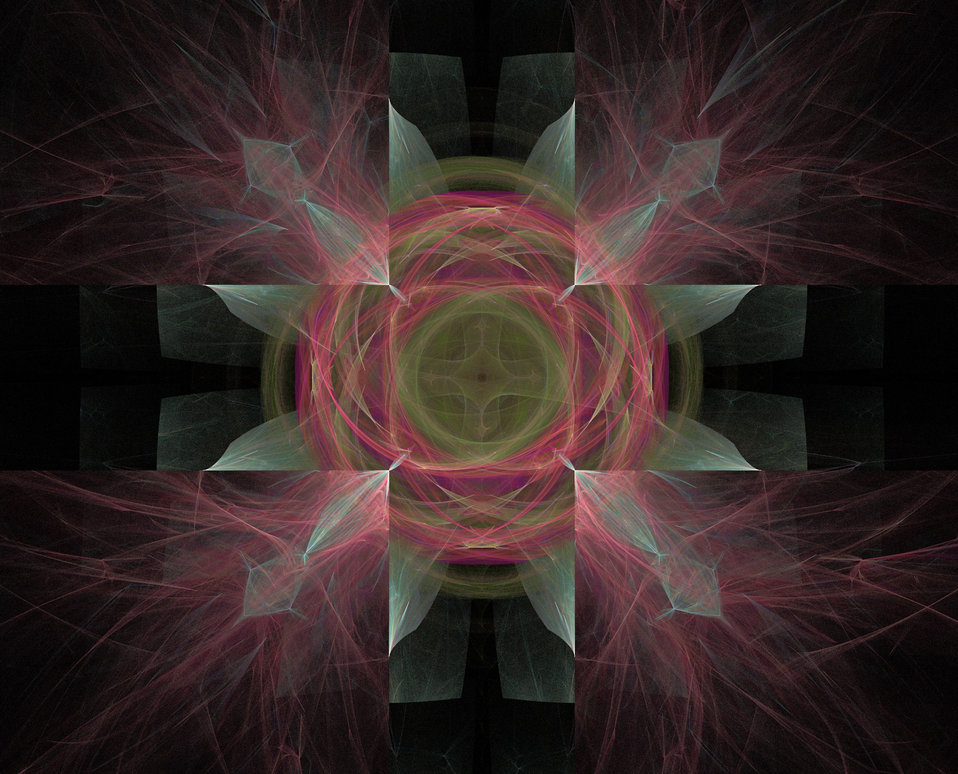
Geometric cross

Fractal in muted shades in geometric design and swirls.